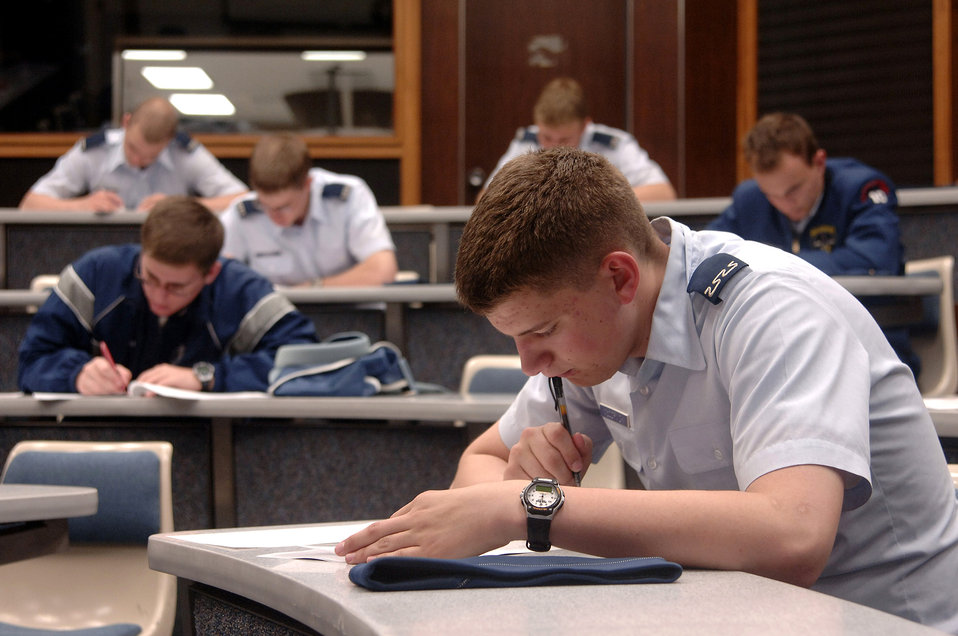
Life at the academy

Freshman Cadet Joshua McCormick takes the Military Knowledge Test during the Academy Cadet Wing Unit Compliance Inspection in April at the U.S. Air Force Academy.